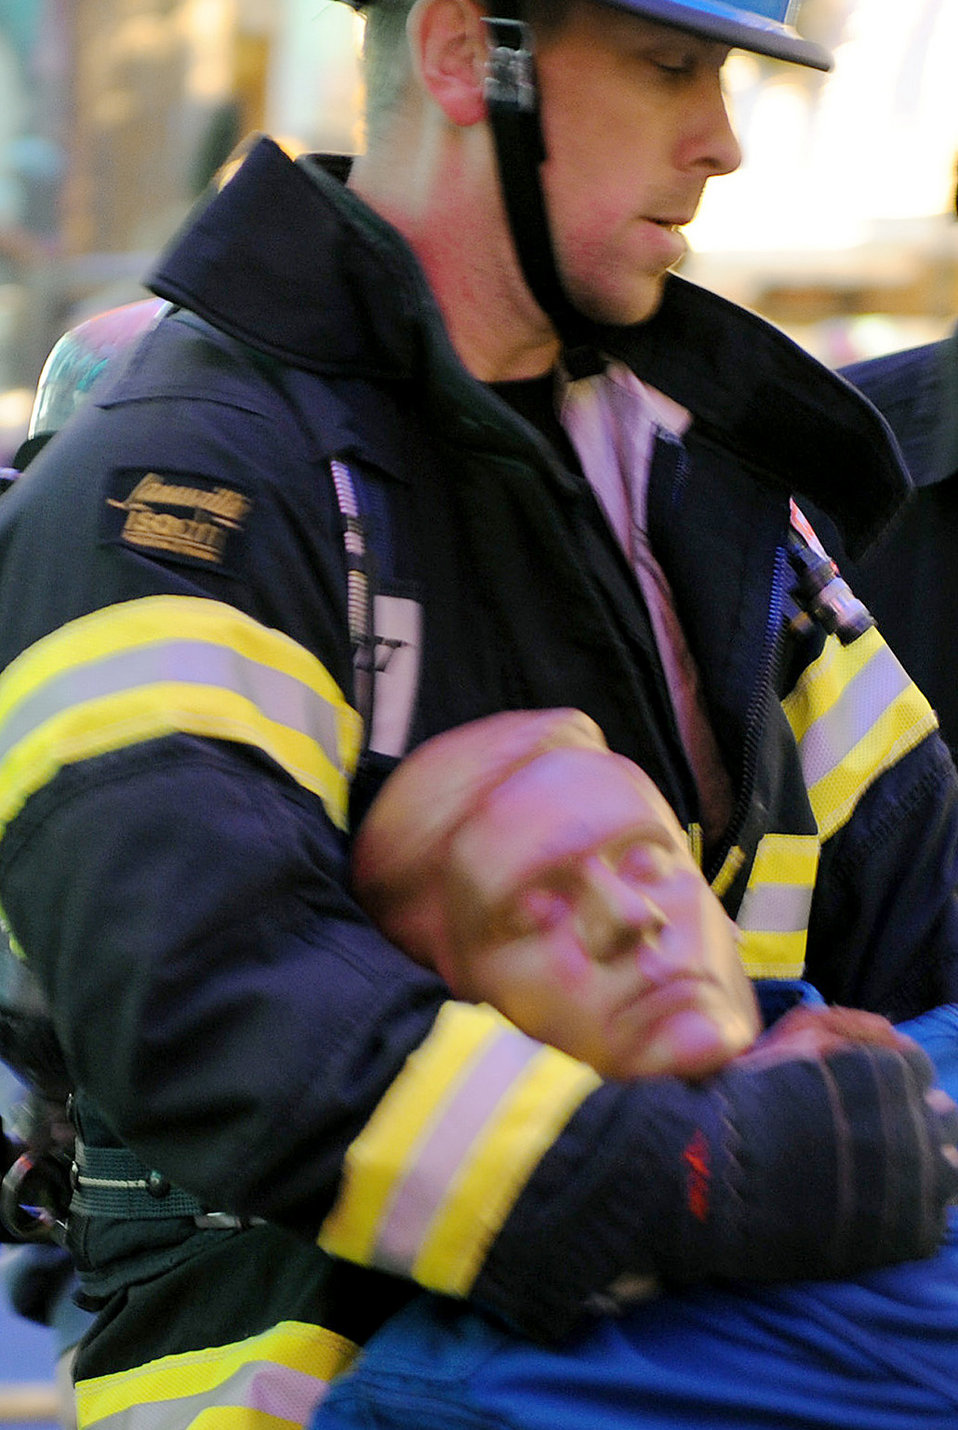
Academy firefighters win DOD awards

Air Force Academy Deputy Fire Chief Ken Helgerson, seen here competing in the World Firefighter Combat Challenge Nov. 20, 2009 in Las Vegas, received the Department of Defense's 2010 Ray Picard Award, which recognizes individual superior leadership and outstanding contributions to fire and emergency service accreditation.